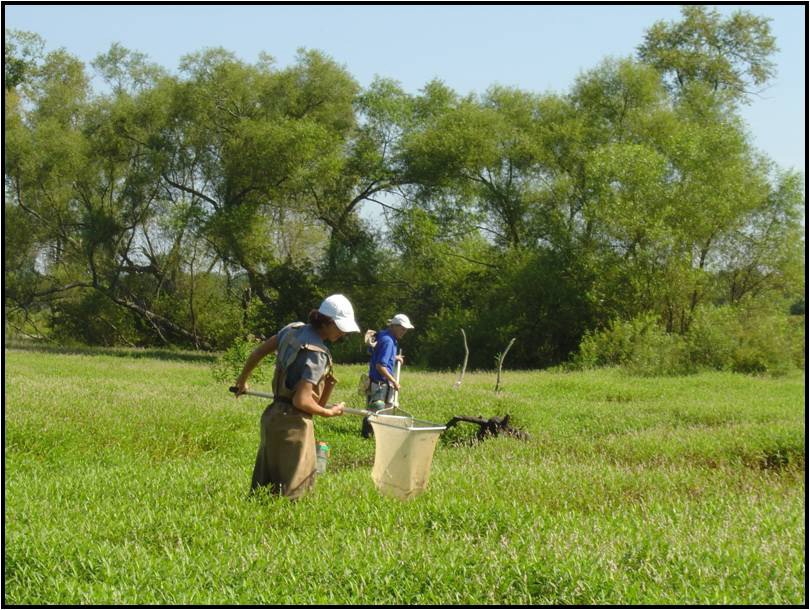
Sampling, Tsuga Trail Pond, Erie NWR, PA.